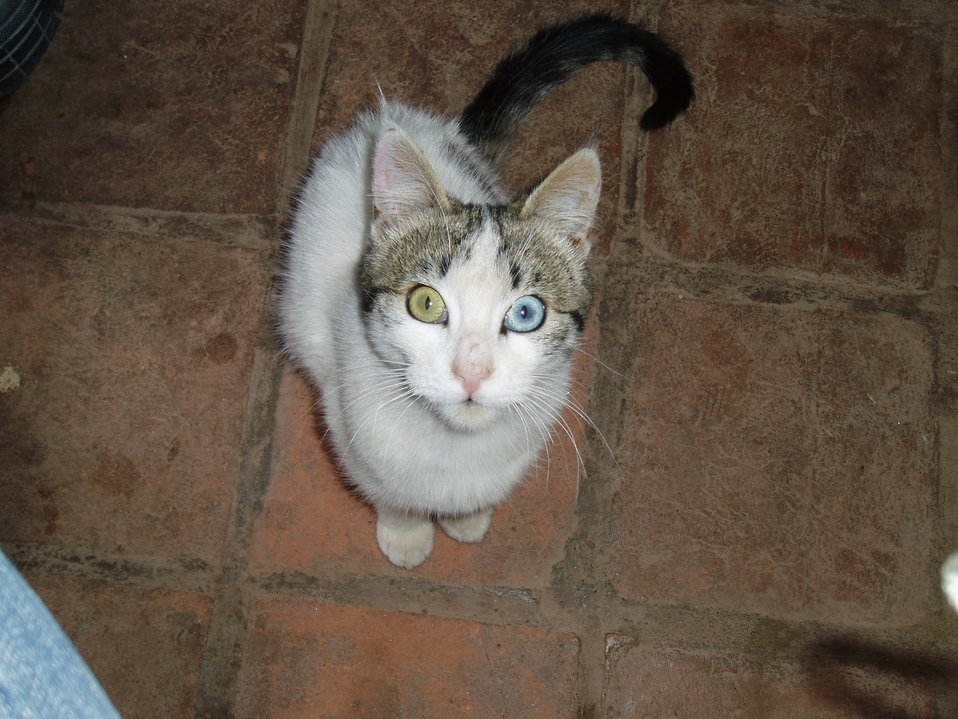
I took this picture myself.